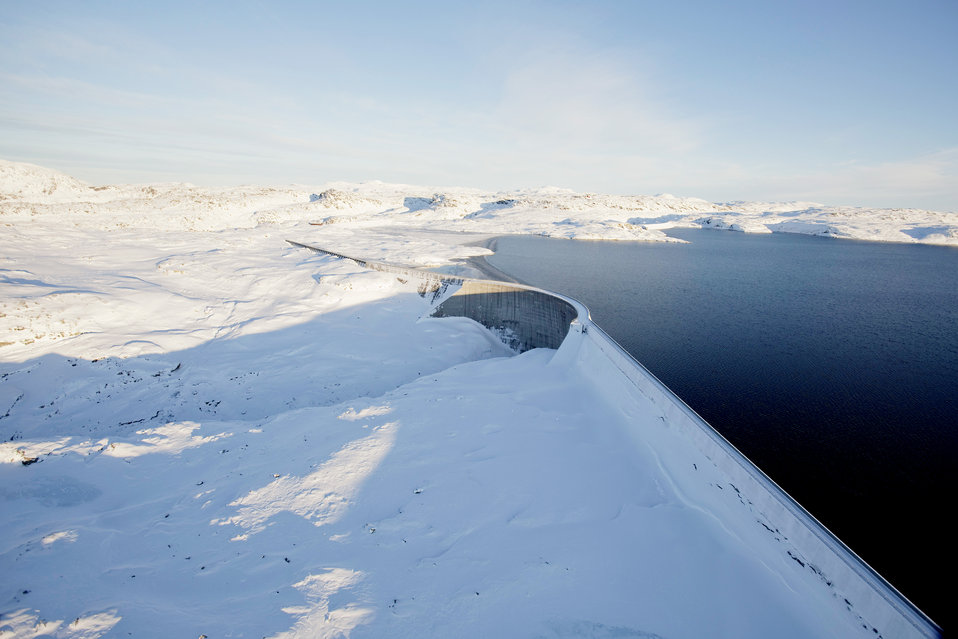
Blåsj

BLÅSJØ 20091212.
Blåsjø energimagasin fra luften.
Foto: Stian Lysberg Solum / Scanpix